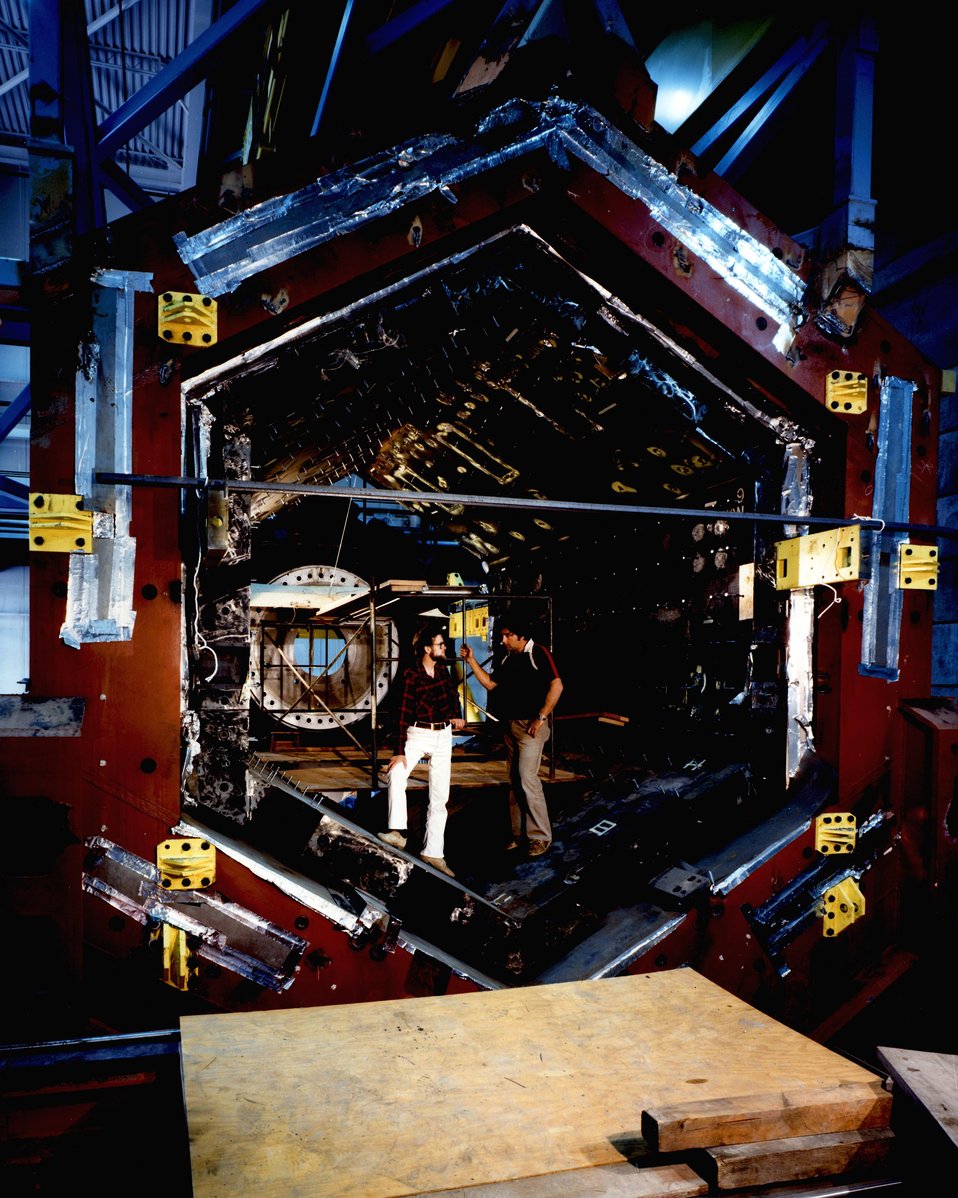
THE HEXAGONAL FRAME AND THE MAGNET STEEL OF THE TIME PROJECTION CHAMBER (TPC) AFTER INITIAL ASSEMBLY.

THE POSITRON-ELECTRON PROJECT (PEP) IS A JOINT UNDERTAKING OF STANFORD LINEAR ACCELERATOR CENTER (SLAC) AND THE LAWRENCE BERKELEY LABORATORY (LBL). THE PEP MACHINE IS DESIGNED TO STORE BEAMS OF ELECTRONS AND POSITRONS CIRCULATING IN OPPOSITE DIRECTIONS AT SINGLE-BEAM ENERGIES BETWEEN 4 GEV AND 18 GEV. THE SOURCE OF THE BEAMS WILL BE THE PRESENT SLAC ACCELERATOR. THE COUNTER-ROTATING BEAMS OF ELECTRONS AND POSITRONS WILL COLLIDE WITH EACH OTHER AT SIX POINTS IN THE MACHINE. THESE COLLISION OR BEAM-INTERACTION POINTS WILL BE USED FOR HIGH-ENERGY PHYSICS EXPERIMENTS.